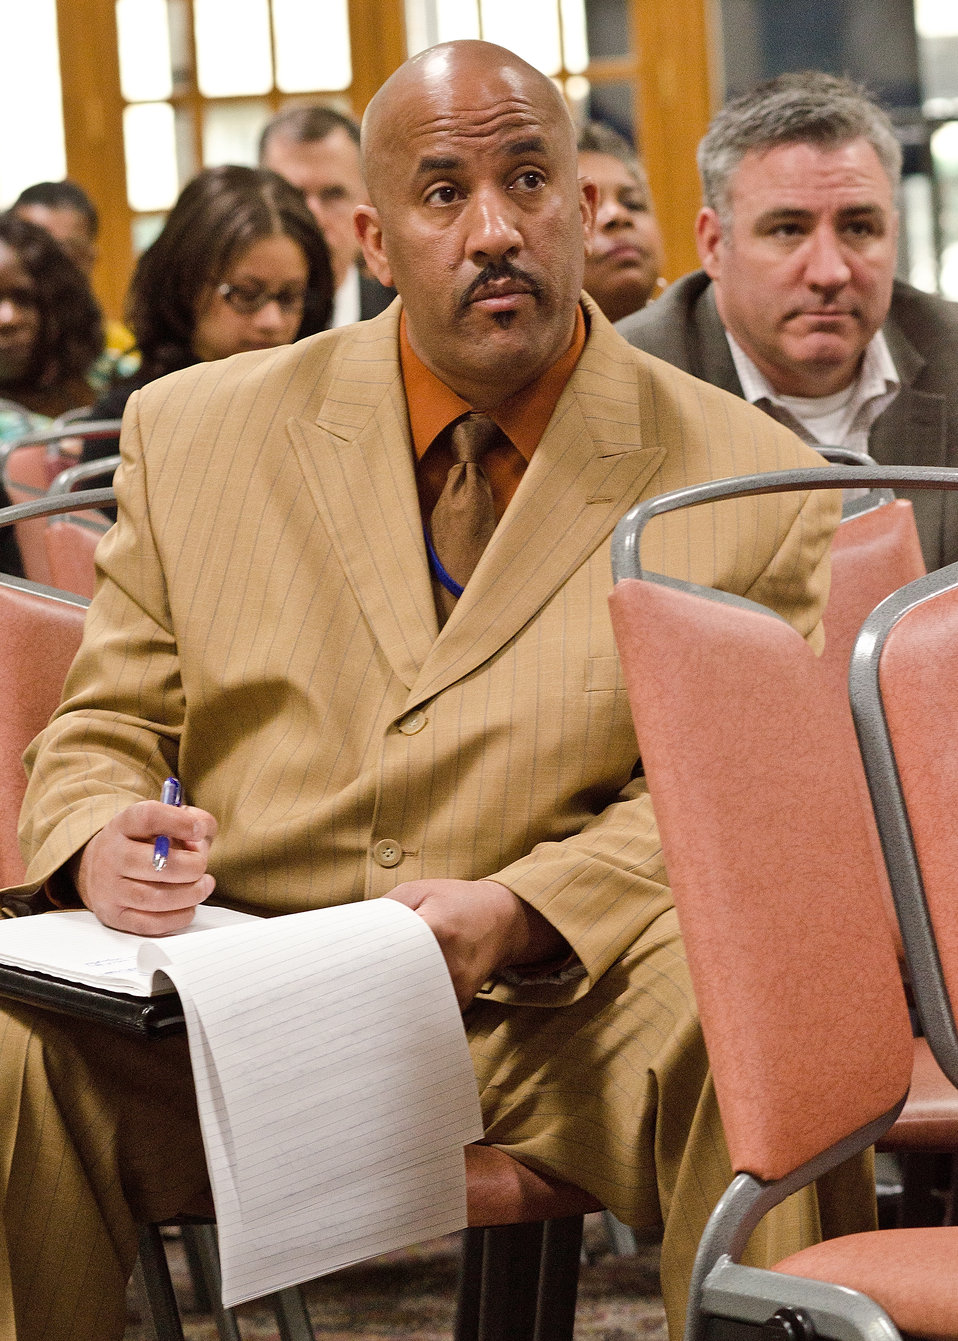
U.S. Department of Agriculture (USDA) employees were given the opportunity to ask Agriculture Secretary Tom Vilsack questions about the Blueprint for Stronger Service Initiative and hear directly from the Secretary of Agriculture,during the Ask The Secretary event held in the South Building Cafeteria, in Washington, D.C., on Wednesday, March 21, 2012, The Blueprint for Stronger Service Initiative aims to build a modern and efficient service organization that is closely timed with technological innovations - and better suited to respond to 21st century agricultural challenges.